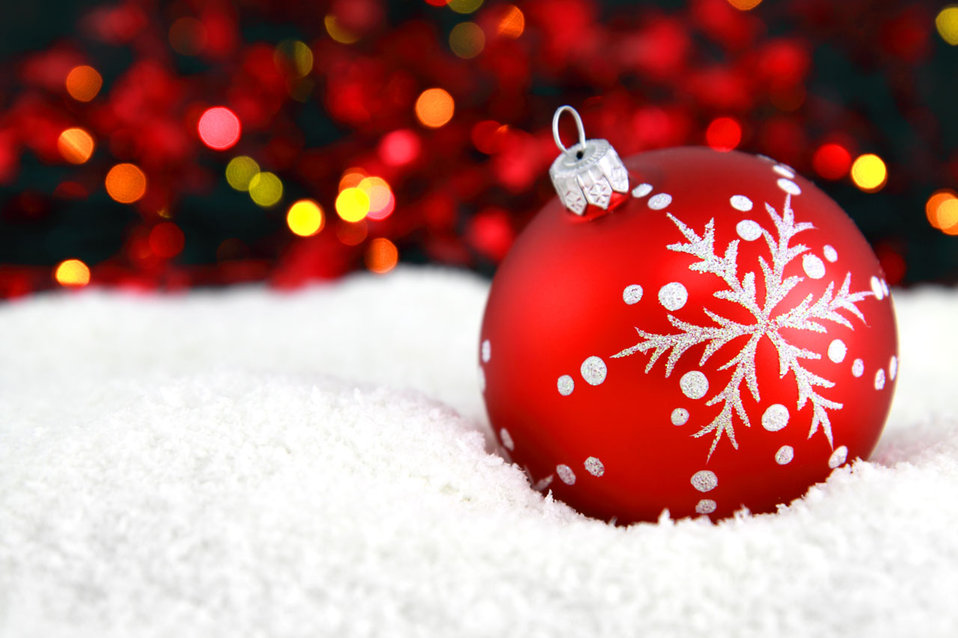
Bauble in snow

Red christmas bauble in snow with lights in the background.